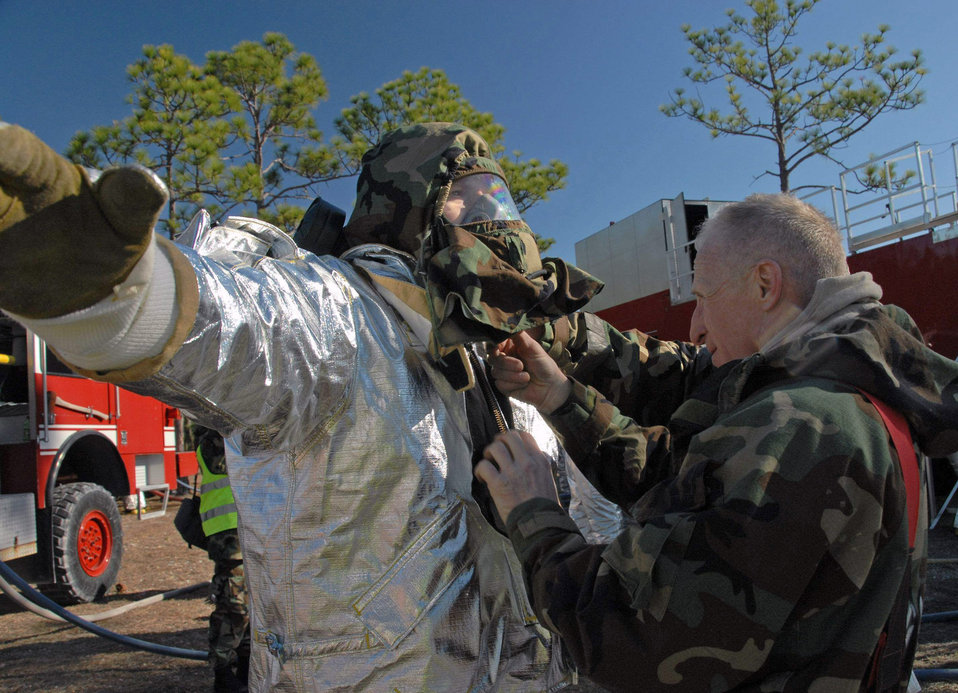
Succeeding at Silver Flag

Master Sgt. Thomas J. Miskiv, a firefighter with the Massachusetts Air National Guard's 104th Fighter Wing, adjusts a member's protective suit Feb. 3 during a Silver Flag exercise at Tyndall Air Force Base, Fla. This exercise allows Airmen to train on up-to-date technology.